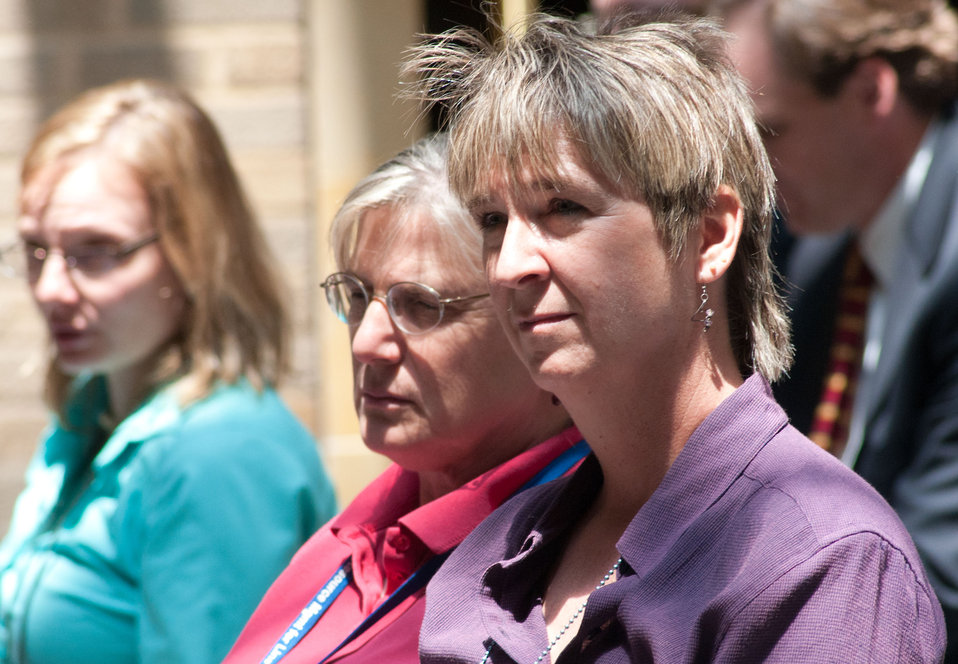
Guests at the International Year of Forests (IYOF) on Friday, June 3, 2011 event in the Patio of the Whitten Building, U.S.Department of Agriculture in Washington, DC.